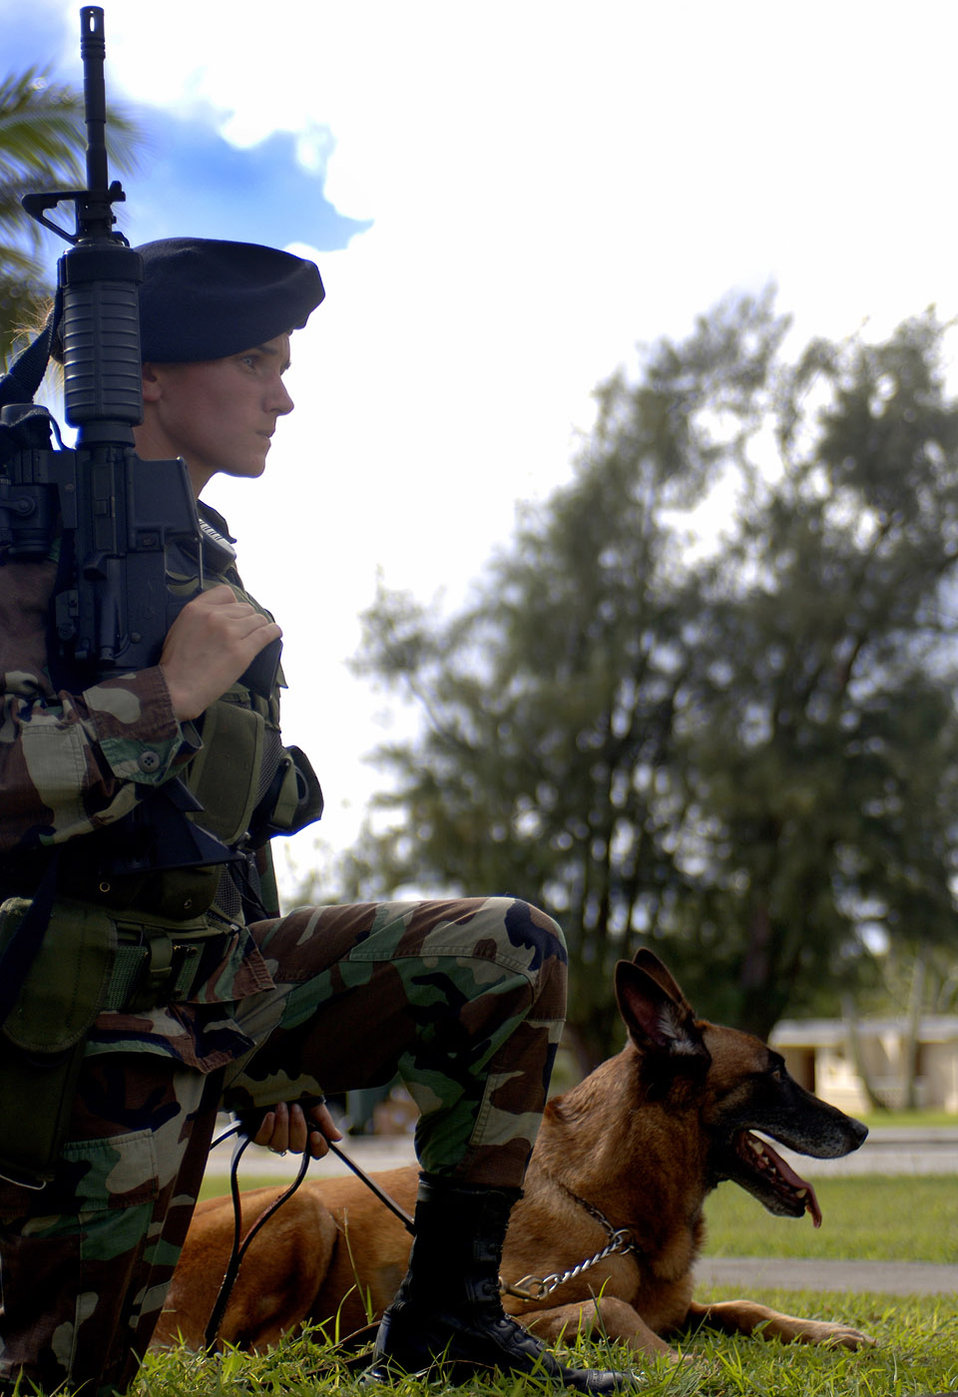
Watch

ANDERSEN AIR FORCE BASE, Guam -- Staff Sgt. Staci Funk and military working dog Reddy, watch over possible suspects as a responding security unit during a simulated robbery as part of exercise Beverly Palm 05-07. Staff Sgt. Staci Funk is assigned to the 36th Security Forces here.